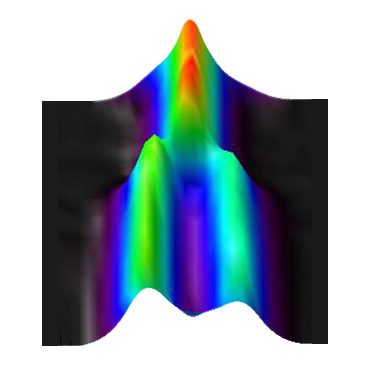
Superconductivity

NIST researchers have found that new iron-based high-temperature superconductors subtly change their molecular shape as temperatures decrease. This graphic shows a superconductor transitioning from tetragonal (at top) to orthorhombic at about 220 Kelvin (-53 Celsius). Such physical changes appear to be a precursor to superconductivity, in which electric current can flow without resistance.